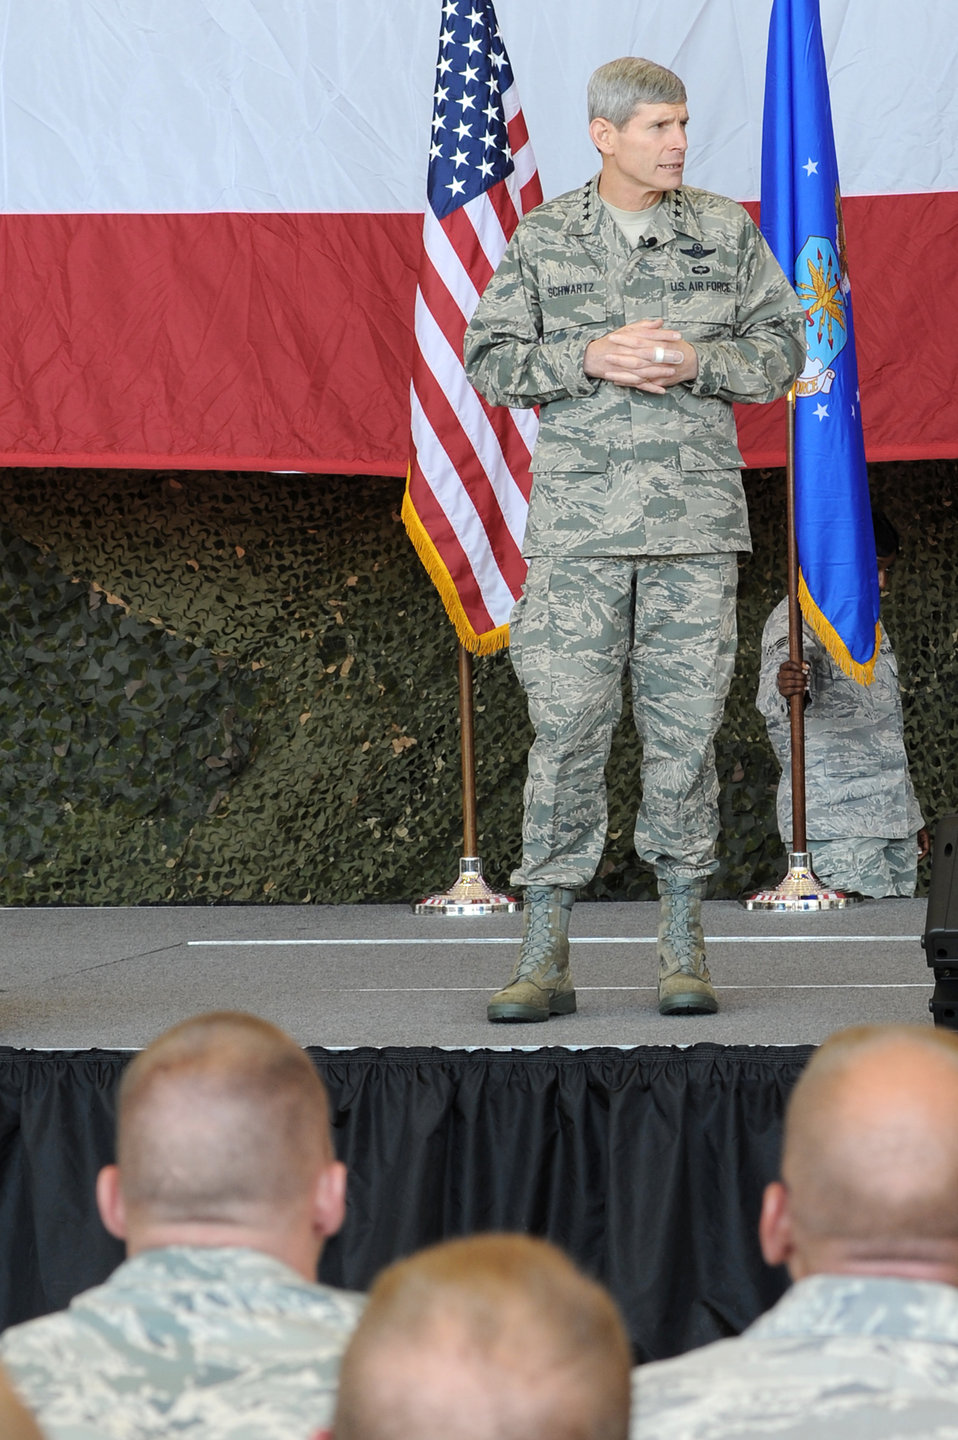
CSAF addresses AF issues, surveys tornado damage at Little Rock AFB

Air Force Chief of Staff Gen. Norton Schwartz answers questions from Airmen May 4, 2011, during an all call at Little Rock Air Force Base, Ark. General Schwartz answered questions regarding a variety of topics, including the current Air Force operations tempo and future deployment outlook.